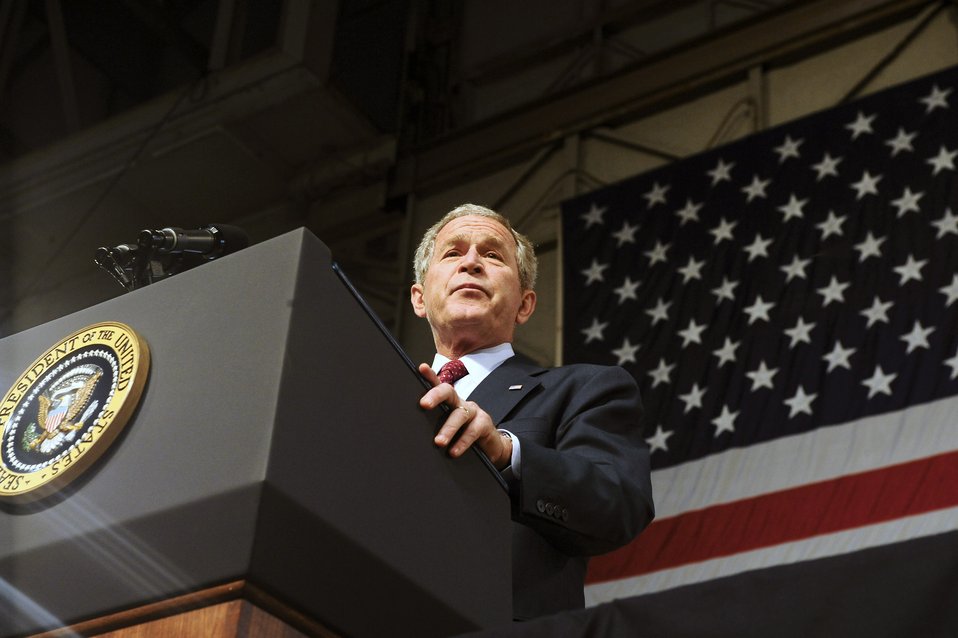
President visits Eielson

President George W. Bush looks out into the crowd while giving his speech Aug. 4 at Eielson Air Force Base, Alaska. During his time here, he talked to a crowd of more than 2,000 military members.